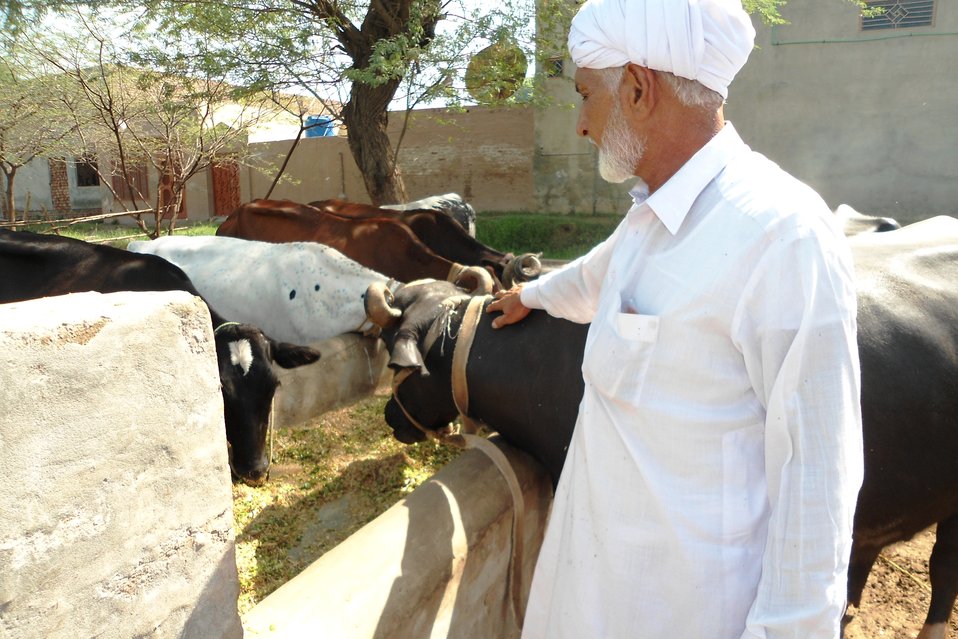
Feeding his animals in accordance with the modern techniques learned in the course.